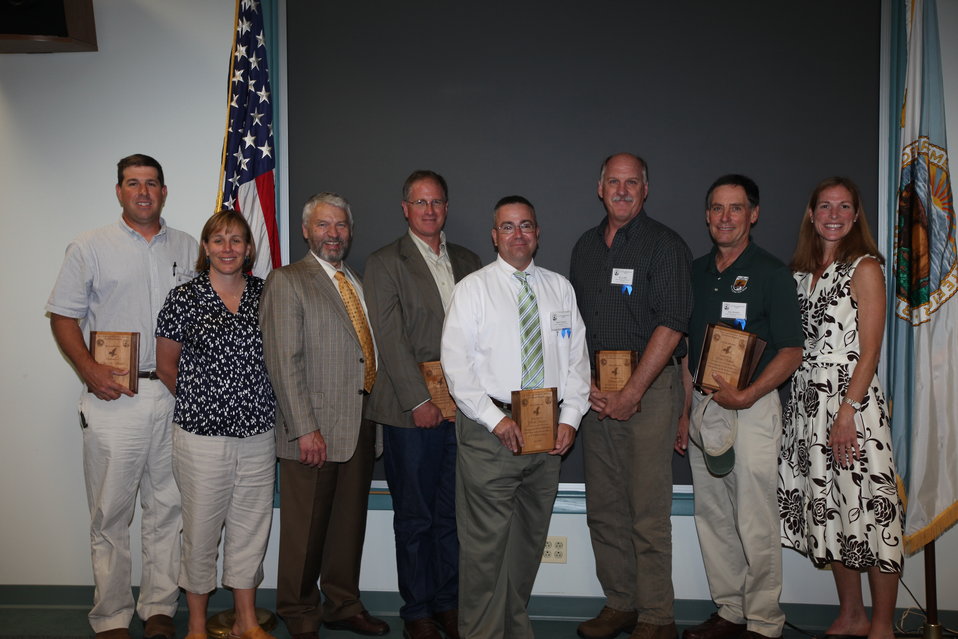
Regional 2011 Storm Season Restoration Crew

From left to right: Chris Smith, Deputy Regional Director Deb Rocque, Deputy Director Rowan Gould, Jed Wright, Mark Secrist, Steve Hill, Eric Derleth, Regional Director Wendi Weber